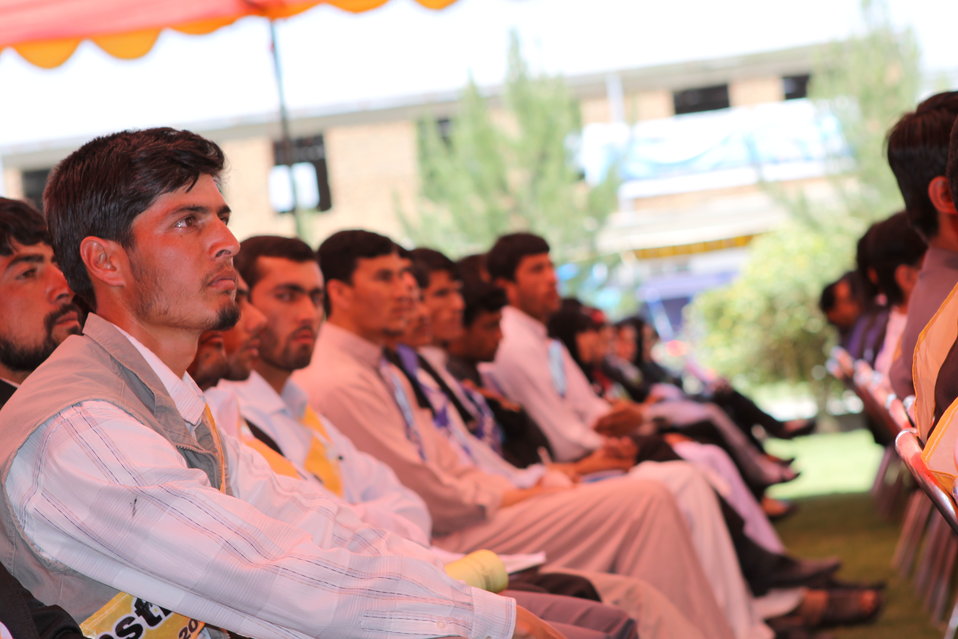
100522 ATVI Graduation 062